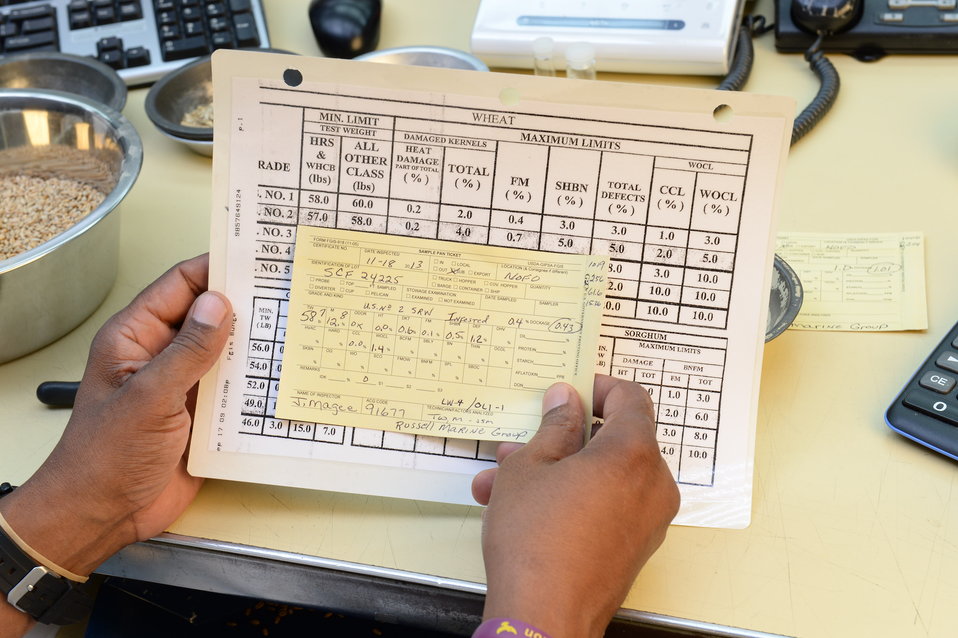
U.S. Department of Agriculture (USDA) Grain Inspection, Packers and Stockyards Administration (GIPSA) Federal Grain Inspection Service (FGIS) employee compares results of tests done on wheat samples against wheat standards chart at the FGIS inspection laboratory in New Orleans, LA on Monday, Nov. 18, 2013.